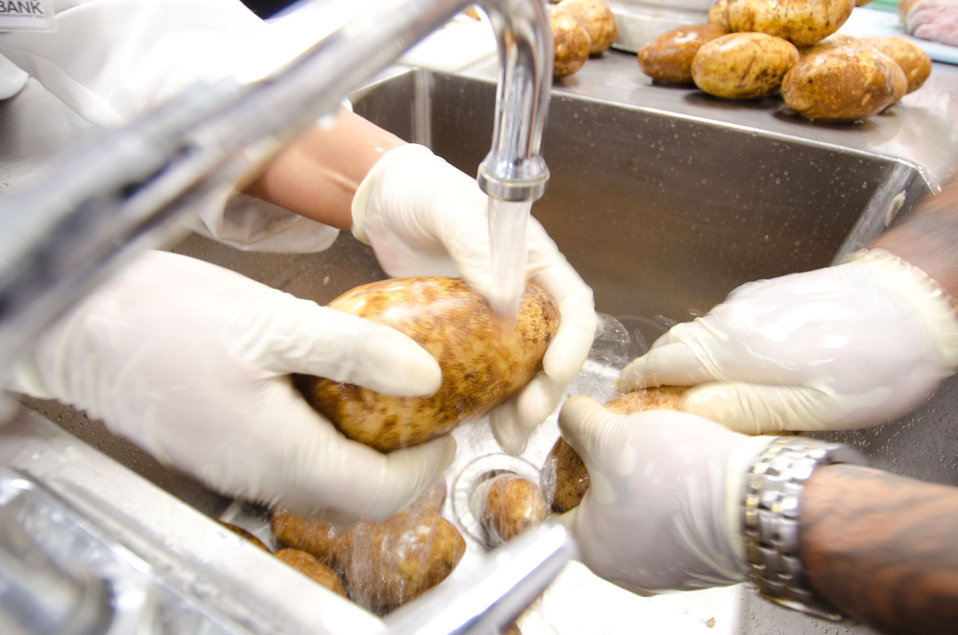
San Antonio Food Bank (SAFB) Community Kitchen students wash potatoes that will be sliced, cooked and mashed for Kids Cafe meals being prepared by Community Kitchen Class 35, in San Antonio, TX, on Monday, October 31, 2011. Other meals prepared by the Community Kitchen include the U.S. Department of Agriculture (USDA) Summer Food Service Program for children during summer months, and the year-round Child and Adult Care Feeding Program (CACFP). The Community Kitchen trains the unemployed, feeds the hungry, and generates public support and revenue through social enterprise. They began creating meals in 2003, with volunteers and the Community Kitchen students looking to further themselves in a promising culinary career. Over 16-week course individuals receive basic culinary training, similar to portions of an accredited culinary institution, to develop their culinary job skills. The program is lead by Chef Rudy Garza and his team of instructor chefs, present training and work demands that build useful job skills. The students focus their new talents on the preparation of meals for area shelters, kids cafes, summer feeding sites (www.summerfood.usda.gov/), and catering services. The San Antonio Food Bank is a non-profit organization that serves as a clearinghouse by receiving and storing truckloads of donated food, produce, and other grocery. SAFB distribute these items to over 500 service agencies that help people in need.
“We couldn’t do what we do without our partnership with USDA’” said President and CEO Eric Cooper. He continues, “We are privileged in partnering (with the USDA) to feeding kids, through the summer, with the Summer Food Service Program, and throughout the year, with the Child and Adult Care Feeding Program (CACFP). Then in our approach to feeding seniors, we partner with USDA in the Commodities Supplemental Food Program (CSFP), and the Senior Farmer’s Market (Nutrition) Program. And then work to bring all our (needy) parties together with our Supplemental Nutrition Assistance Program (SNAP) Outreach. You know, once families have access to food we believe it is important to educate them. Through the support of the SNAP-Education Program we are able to educate them during their time of need. With this comprehensive approach we are really able to get the right food, at the right amount, at the right time, to needy families throughout our community – which allows us to feed the fifty-eight thousand we do, each week.”
SAFB serves 16 counties in Southwest Texas and states, “Nearly one out of every four children and one out of every five adults in Southwest Texas lives in poverty and has difficulty meeting basic nutritional needs.” According to SAFB, sixty-five percent of the people requesting emergency food have children. “Additionally, the senior citizens and those living on a fixed income generally have limited funds for a consistent grocery budget.”
San Antonio is the seventh largest city in the nation with surrounding farms and ranches near its rivers and water supplies. When available they provide fresh surplus produce. Other commodities come from the food industry and manufacturers. The major food brand companies that for various reasons have surplus commodities donate it to SAFB.
The United States Department of Agriculture donates commodities through programs such as The Emergency Food Assistance Program (TEFAP), while Texas farmers supply fresh produce to their Fresh Produce Program.
Public donations come in the form of money, food, volunteer time, and advocacy. Their fleet of trucks to pickup and deliver food as needed.